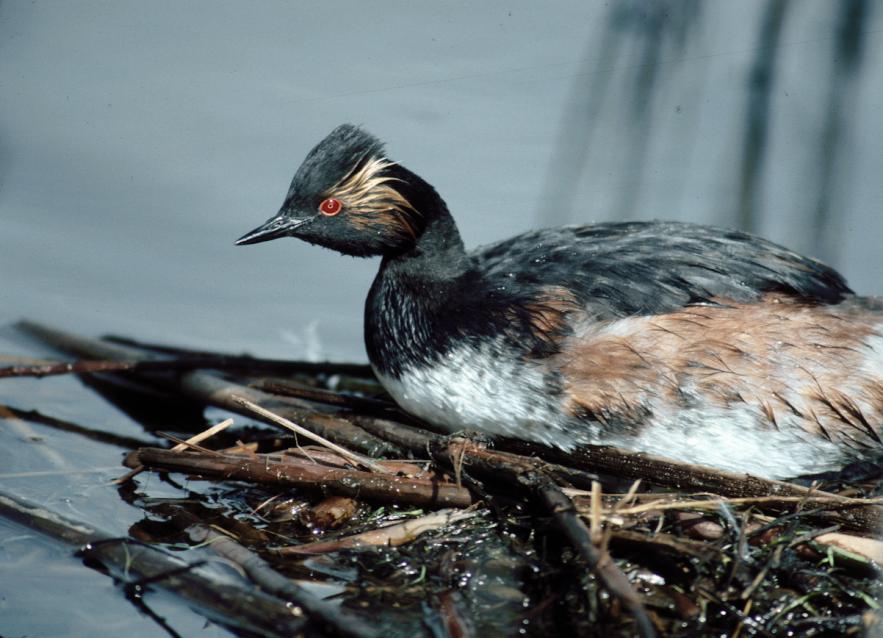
Eared Grebe

The lands of the refuge were established to protect and provide habitat for migratory birds that cross State lines and international borders and are by law a Federal trust responsibility.
The refuge is of great value to waterfowl and shorebirds, as well as other migrating water-dependent bird species, because of the diversity of wetland and upland habitats that provide for the diverse life cycle needs of these species.